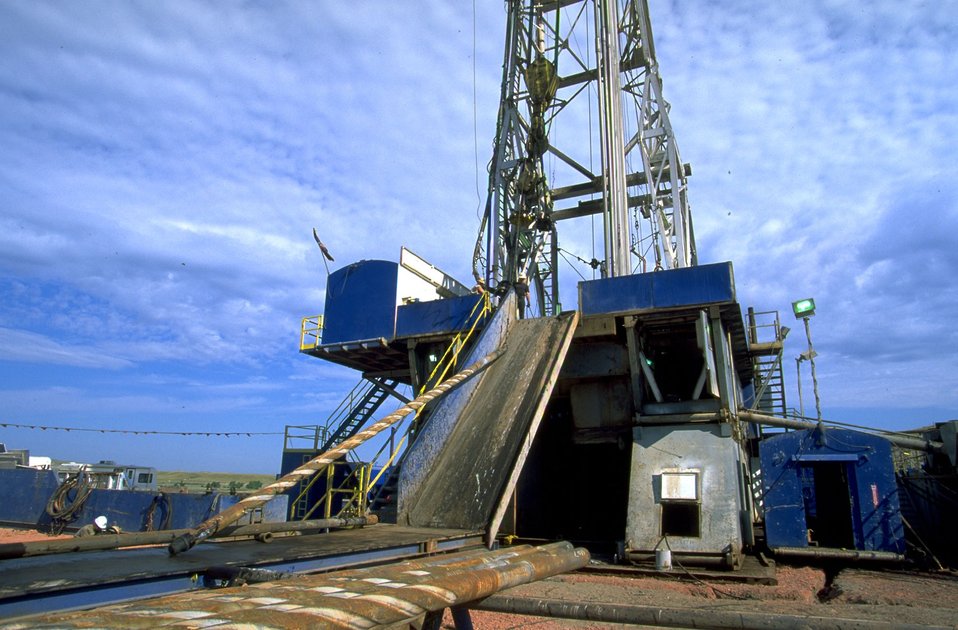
Picking up drill pipe of the rack of an oil drilling rig